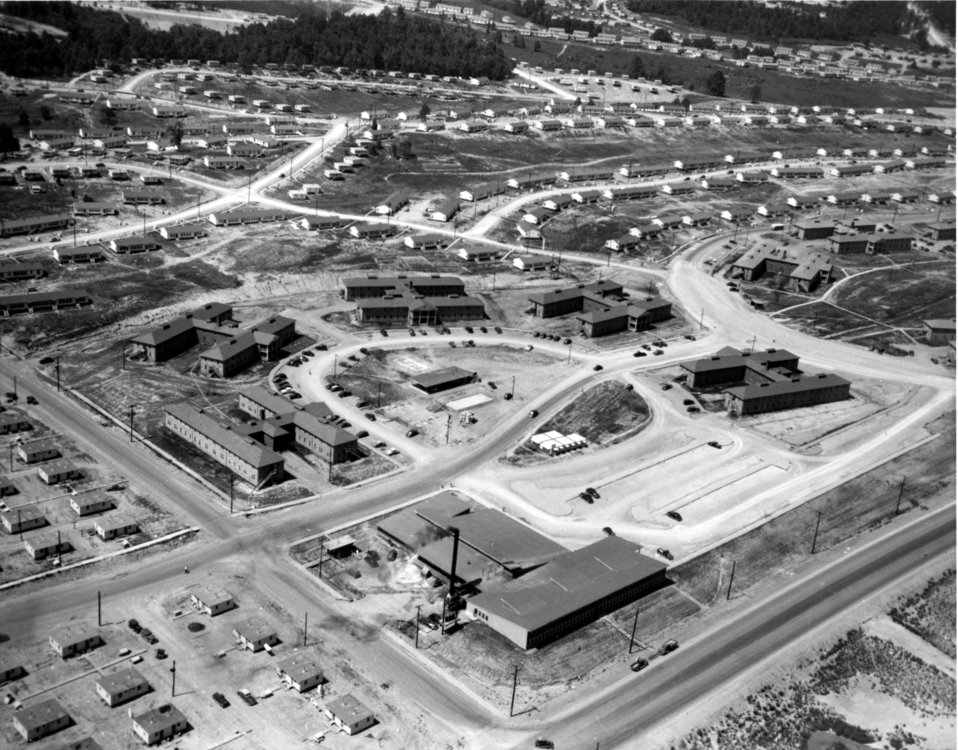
Aerial of Oak Ridge